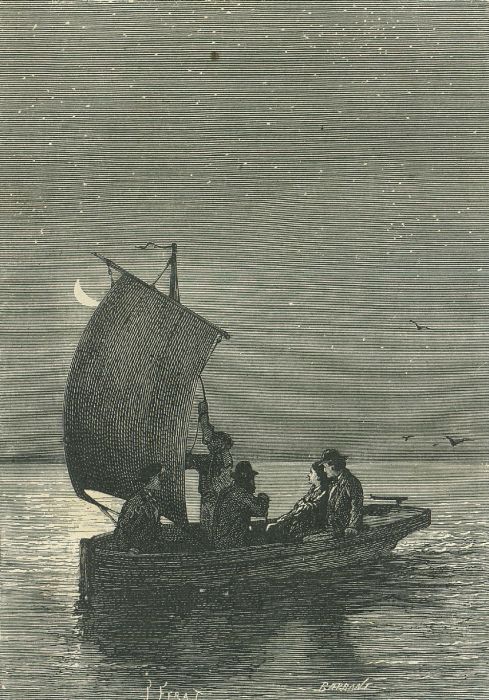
An illustration from the novel 'The Child of the Cavern' (alternative English titles for this novel include: Black Diamonds, Black Indies, Child of the Cavern, or Strange Doings Underground and The Underground City) by Jules Verne drawn by Jules Férat. Polski: Ilustracja powieści Juliusza Verne'a 'Czarne Indie' autorstwa Julesa Férata. Français : 'Les Indes noires', Jules Férat. Orginal description from the book: Français : Le golfe était uni comme un lac.